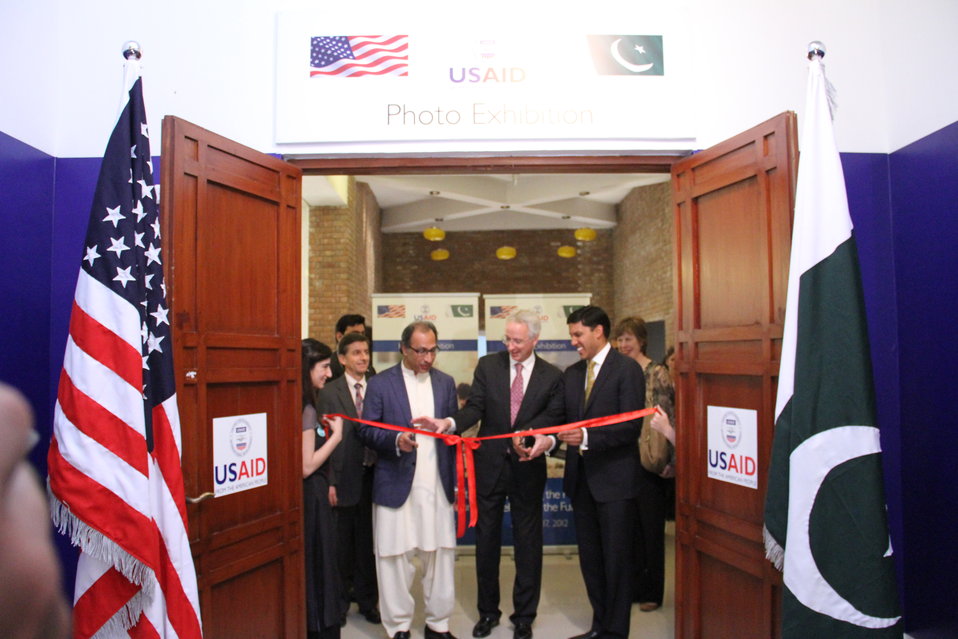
Photo Exhibition Celebrate US-PAK Cooperation at PNCA, Islamabad on April 13, 2012

Federal Minister for Finance Dr. Abdul Hafeez Sheikh, Dr. Rajiv Shah, Administrator of the USAID, and US Ambassador Cameron Munter inaugurating the photo exhibition celebrating more than six decades cooperation between the United Stated and Pakistan.